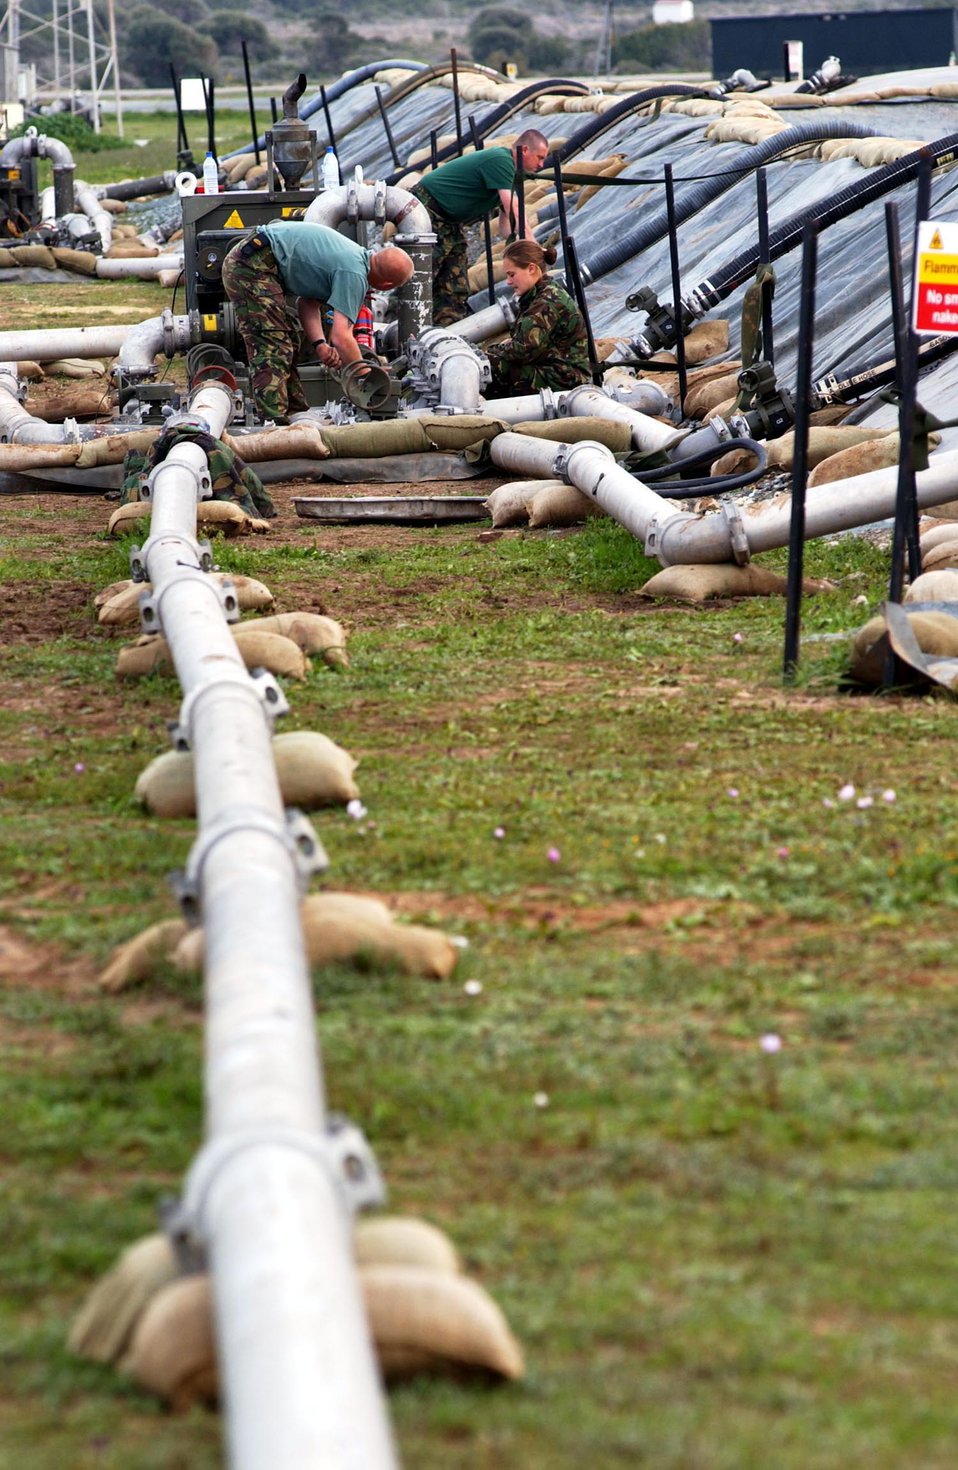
Pipeline

OPERATION IRAQI FREEDOM -- Aircrew from KC-135 Stratotankers assigned to the 401st Air Expeditionary Wing stand ready to pump fuel to the flightline of a forward-deployed base located in the Mediterranean region. The U.S. Air Force, U.S. Navy, the British Army and the Royal Air Force joined forces at an RAF base here to set up a refueling mission.